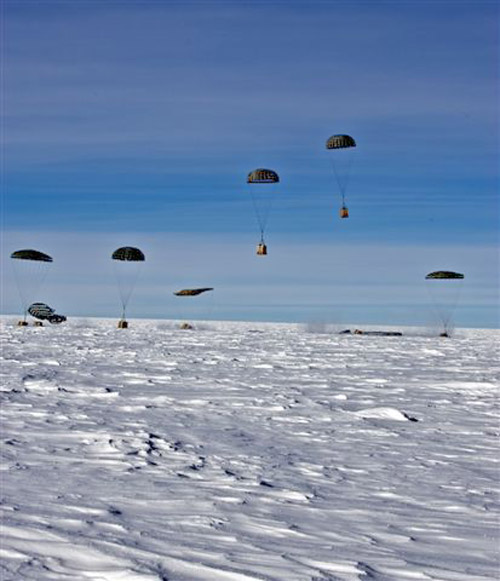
Joint effort key to success in Deep Freeze

Containerized delivery system bundles are recovered by a ground crew member at the South Pole. The bundles were airdropped by a McChord Air Force Base, Wash., C-17 Globemaster III supporting Operation Deep Freeze. The 13th Air Force-led Operation Deep Freeze is a unique joint and total force mission that has supported the National Science Foundation and U.S. Antarctic Program since 1955. By validating the C-17's capability to complete airdrop missions at the geographical South Pole, Joint Task Force-Support Forces Antarctica demonstrated its ability to provide mid-winter emergency re-supply and flexible support to the National Science Foundation and U.S. Antarctica Program.